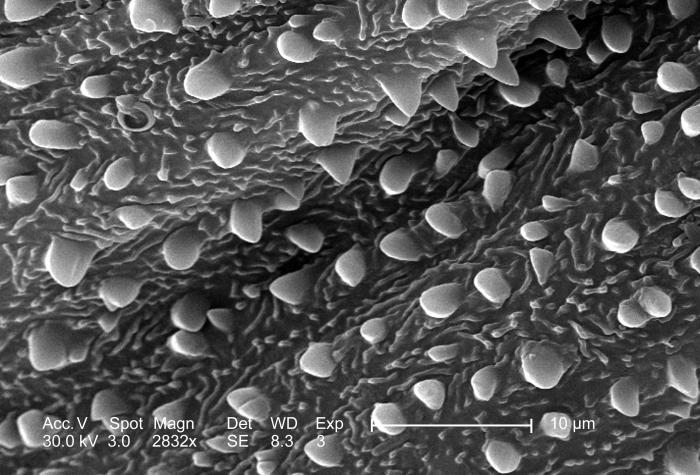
This scanning electron micrograph (SEM), highly magnified at 5664x, revealed the ornamentally adorned exoskeletal surface of an unidentified insect. The exoskeletal section was from the region occupying its inferior abdomen. Overall, the insect was described as being black, and its black wings were patterned with longitudinally oriented red stripes. It measured approximately .25 inches, and was found deceased on the ground of the Decatur, Georgia suburbs.